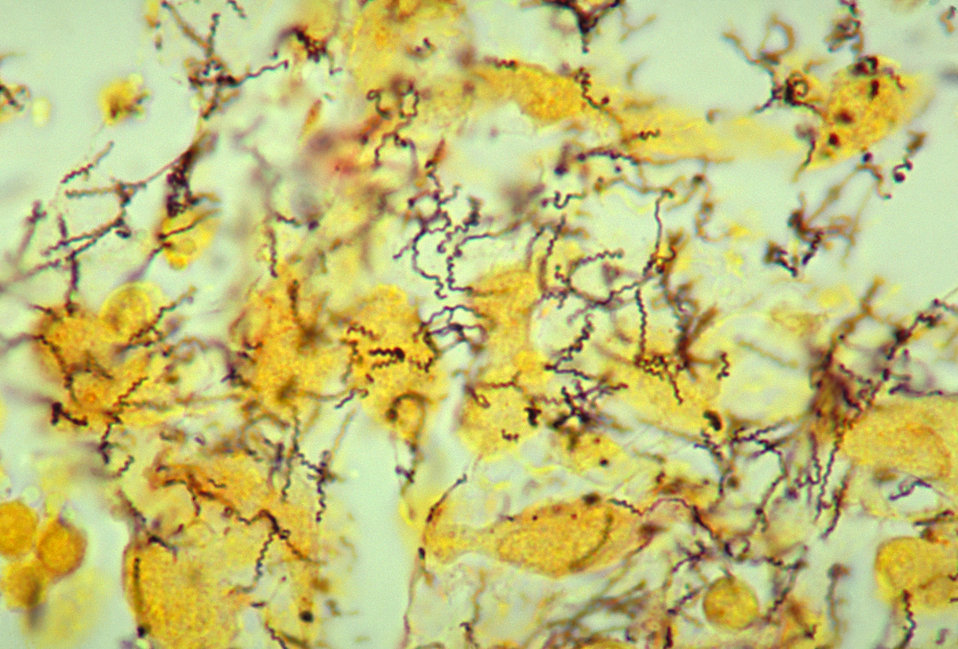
Prepared using the modified Steiner silver stain method, this photomicrograph revealed the presence of Treponema pallidum spirochetes in this tissue sample.